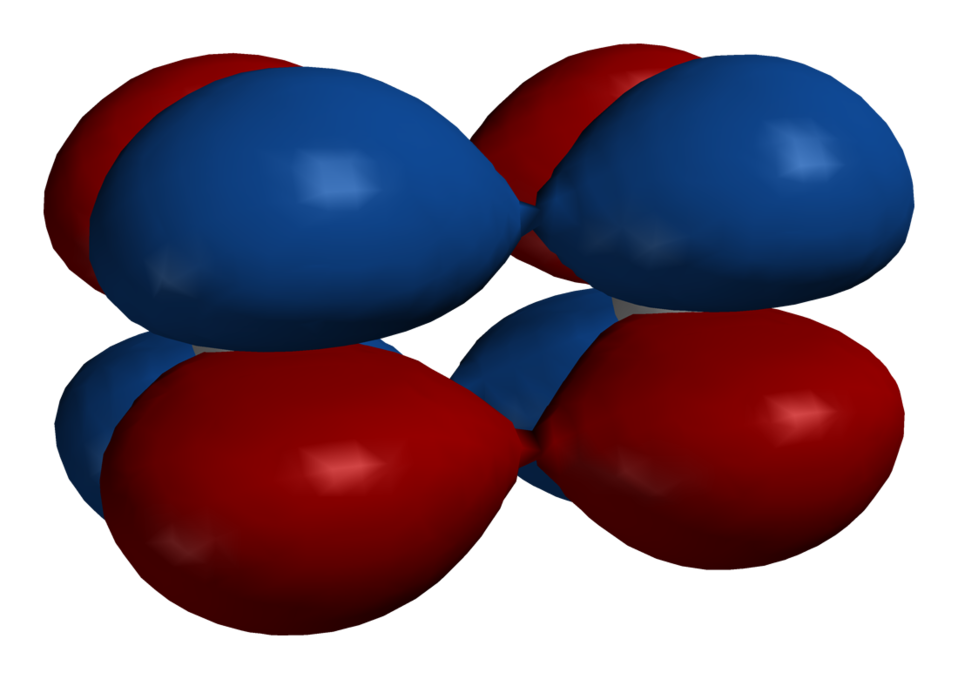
Space-filling model of a delta bond (bonding molecular orbital with δ symmetry)